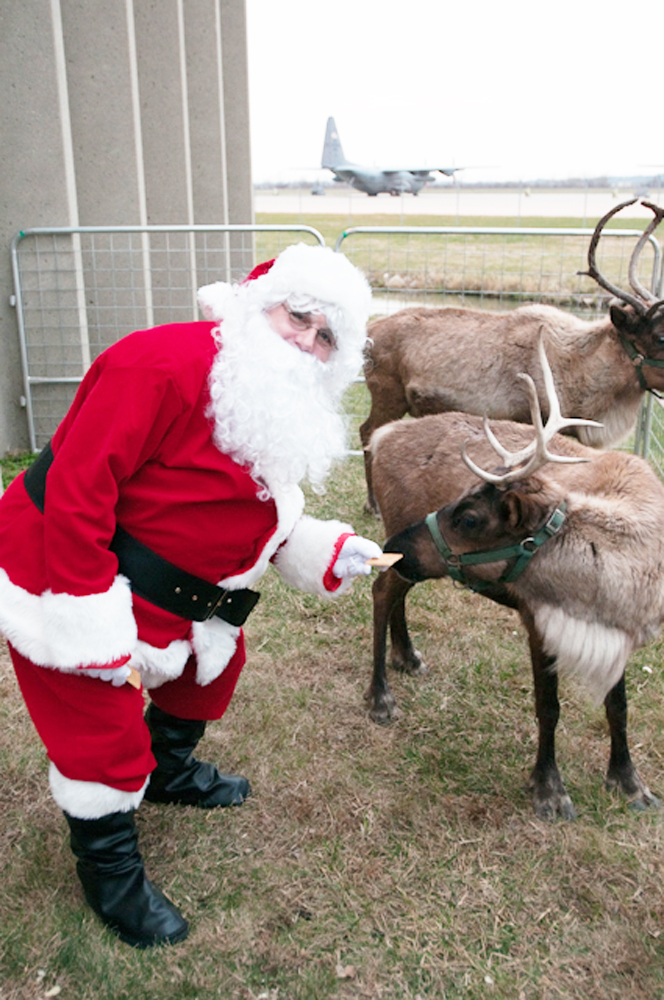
Getting ready for the big flight

Santa takes a moment to feed the reindeer in preparation for his big night at the family day for the Missouri Air National Guard's 139th Airlift Wing Dec. 6, 2009, at the Rosecrans Memorial Airport.